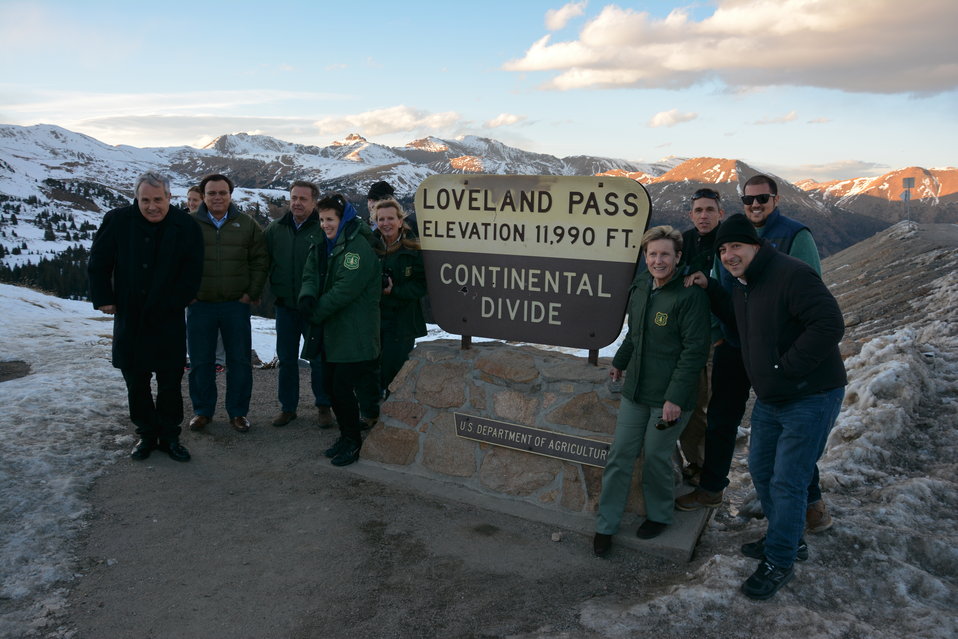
Jewish National Fund

(L to R) Ministry of Environmental Protection Director General David Leffler, KKL-JNF World Chairman Efi Stenzler, KKL-JNF Chief Forester David Brand, Head of International Relations for the Minister Hadas Magen Molho, U.S. Forest Service Public Affairs Jane Leche, U.S. Forest Service Deputy Regional Forester of Operations Maribeth Gustafson, JNF Chief of Staff; (back right) Rene Reinhard, U.S. Forest Service International Programs Chris Soriano, and U.S. Forest Service International Programs Damian Rawoot take in the views from 11,900 feet at the top of Loveland Pass in Colorado.